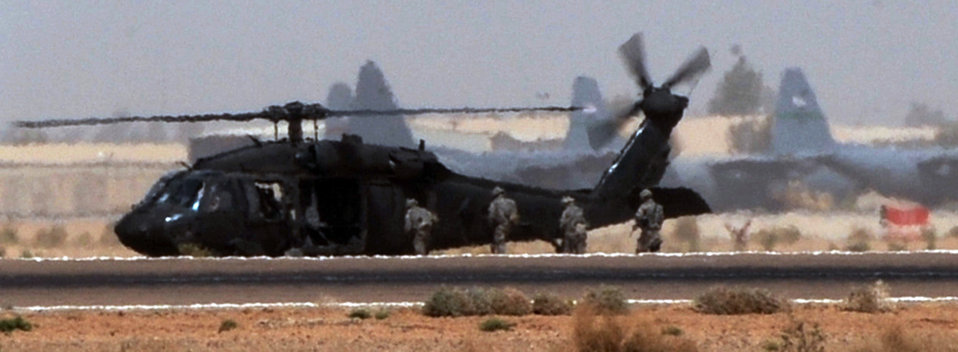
Air Force team conducts air-assault training from Army helos

Airmen from the 532nd Expeditionary Security Forces Squadron's quick reaction force ingress an Army helicopter from C Company, 1-137th Aviation Regiment, during air-assault training May 23 at Joint Base Balad, Iraq. The Airmen trained on egress, ingress and setting up security for the helicopter. Members of the 532nd ESFS QRF are often called